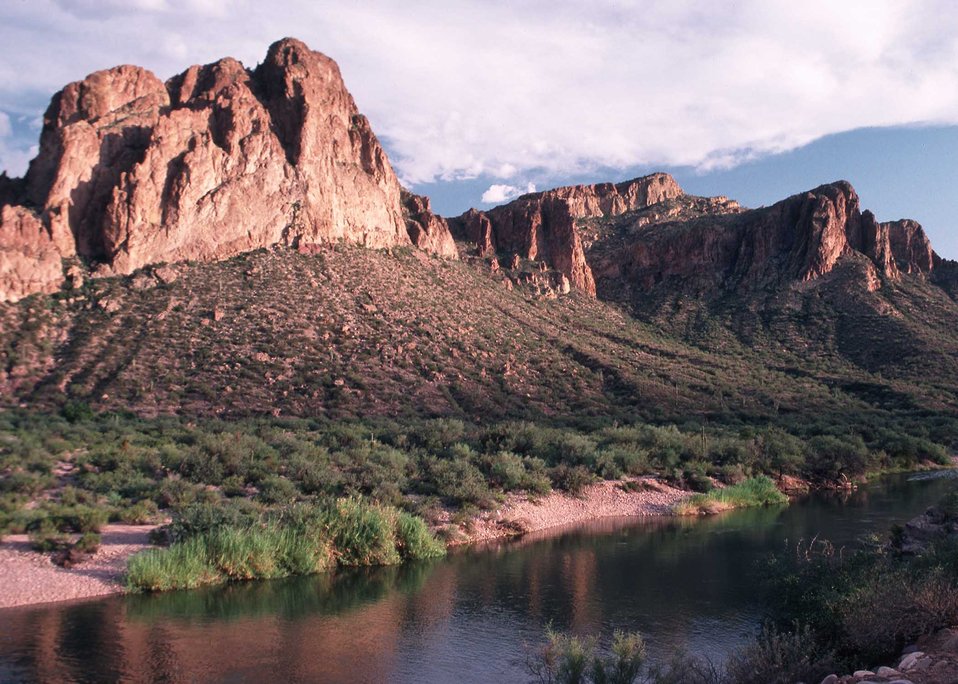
Water flows through arid desert near Phoenix, AZ.